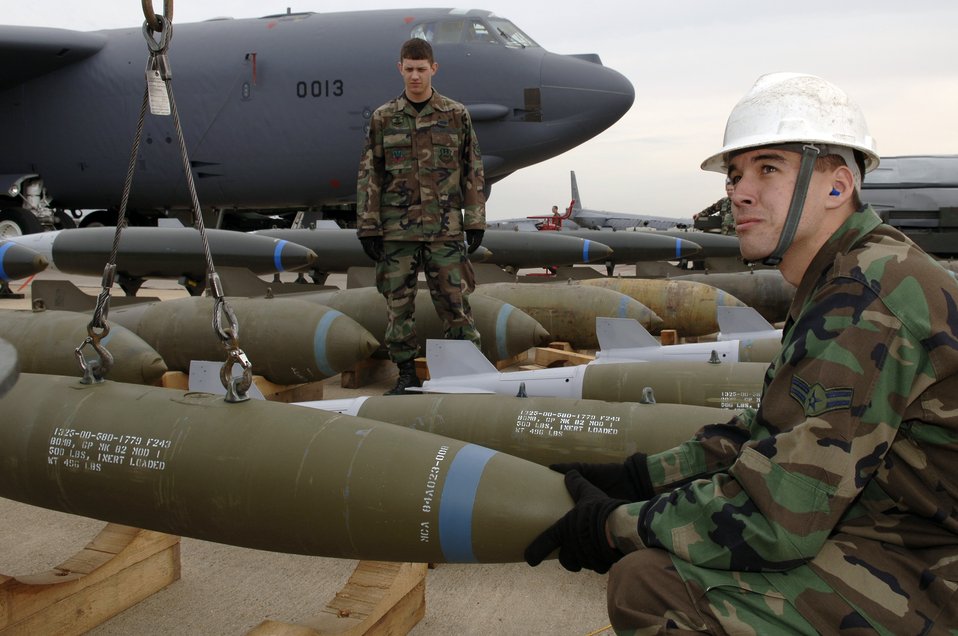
Display of might

BARKSDALE AIR FORCE BASE, La. -- Airman 1st Class Scott LaCoy aligns an MK-82 bomb. The munitions are on display with a B-52 Stratofortress to display its full capabilities. Airman LaCoy is with the 2nd Munitions Squadron here.